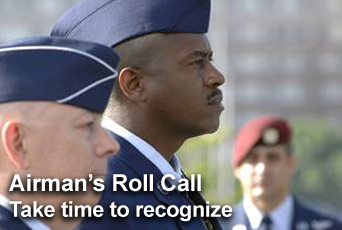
Airman's Roll Call highlights recognizing Airmen

This week's Airman's Roll Call focuses on ways to recognize Airmen and their accomplishments.